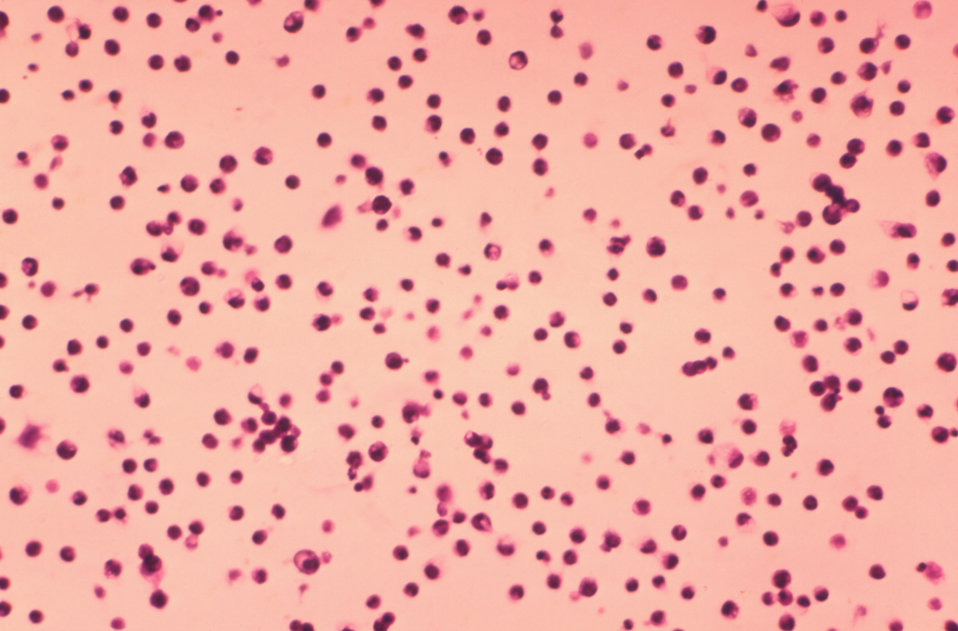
This photomicrograph is the second in a series of three images depicting the cellular content of a peritoneal exudate extracted from the abdominal cavity of a guinea pig. The prevalent cell type is represented by numerous white blood cells (WBCs) of the polymorphonuclear type (PMNs). This image was captured under a magnification of 250X. See PHIL 15443, and 15445, for the other two images in this series.